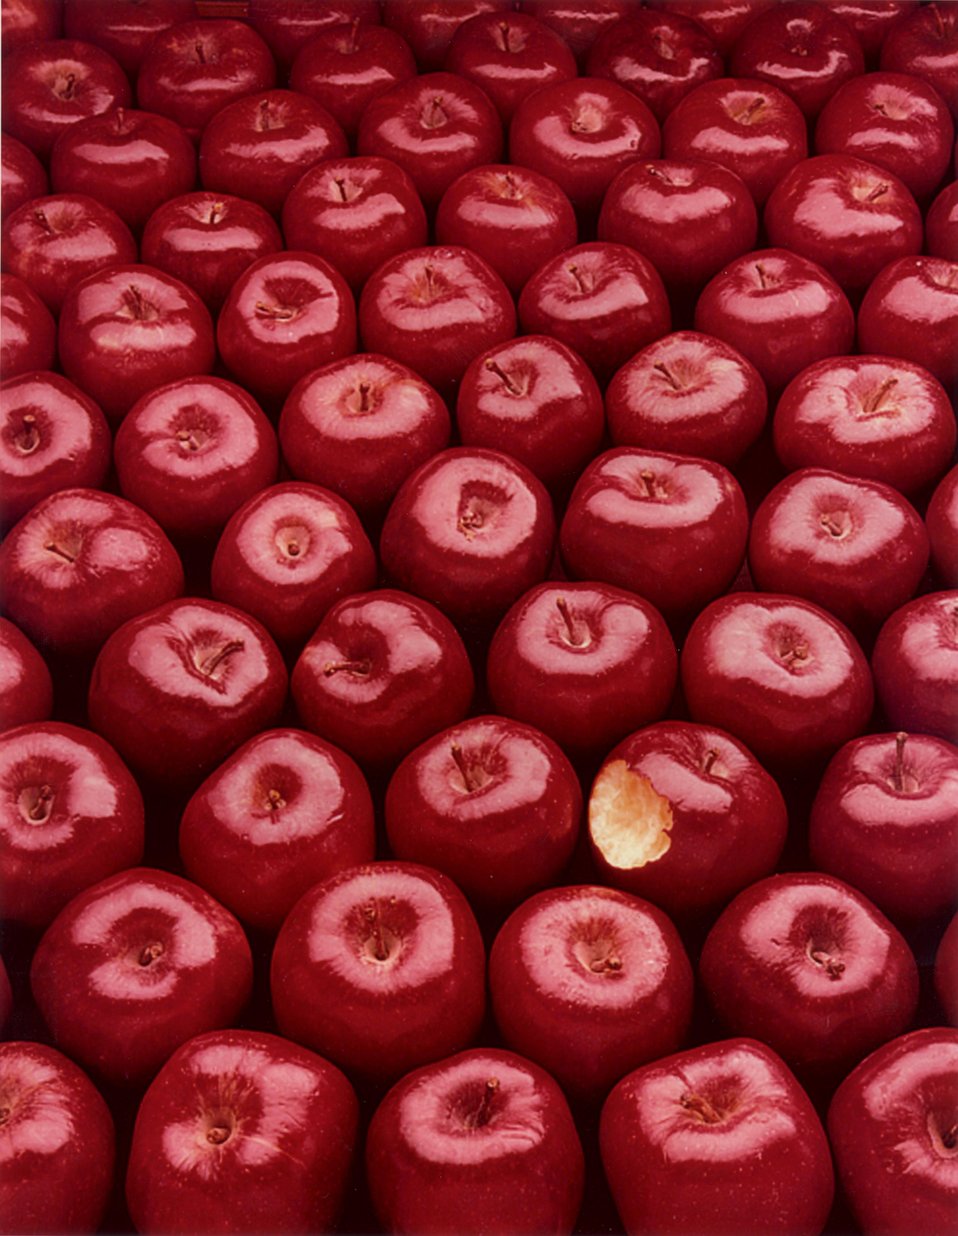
APPLES THAT HAVE BEEN IRRADIATED.

FOOD IRRADIATION IS AN FDA APPROVED TECHNOLOGY THAT CAN BE USED TO CONTROL INSECTS IN FRUIT AND VEGETABLES, EXTEND THE SHELF LIFE OF FRESH PRODUCE, AND CONTROL PATHOGENIC ORGANISMS IN PRODUCTS SUCH AS POULTRY AND RED MEAT. PNNL HAS AN EXTENSIVE BASE OF EXPERIENCE IN FOOD IRRADIATION INCLUDING PRODUCT TESTING, ENVIRONMENTAL ASSESSMENT, FACILITY DESIGN, OPERATION, ECONOMIC ASSESSMENT.